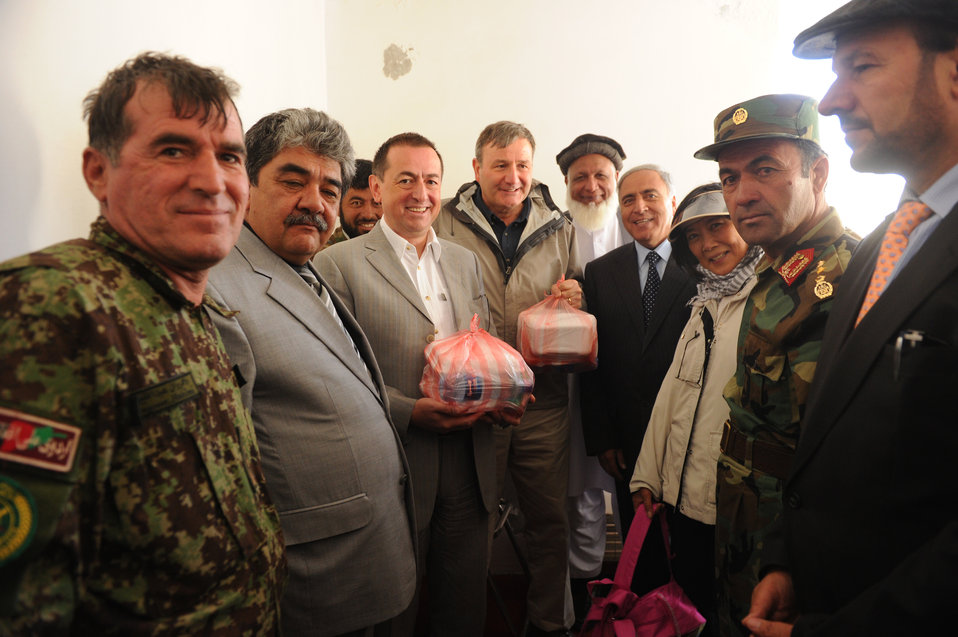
U.S. Ambassador Karl W. Eikenberry attends a ceremony to mark the beginning of renovations at the Salang Tunnel on the border of Parwan and Baghlan Provinces, Afghanistan, on Wednesday, June 15, 2011. (S.K.Vemmer/Department of State)